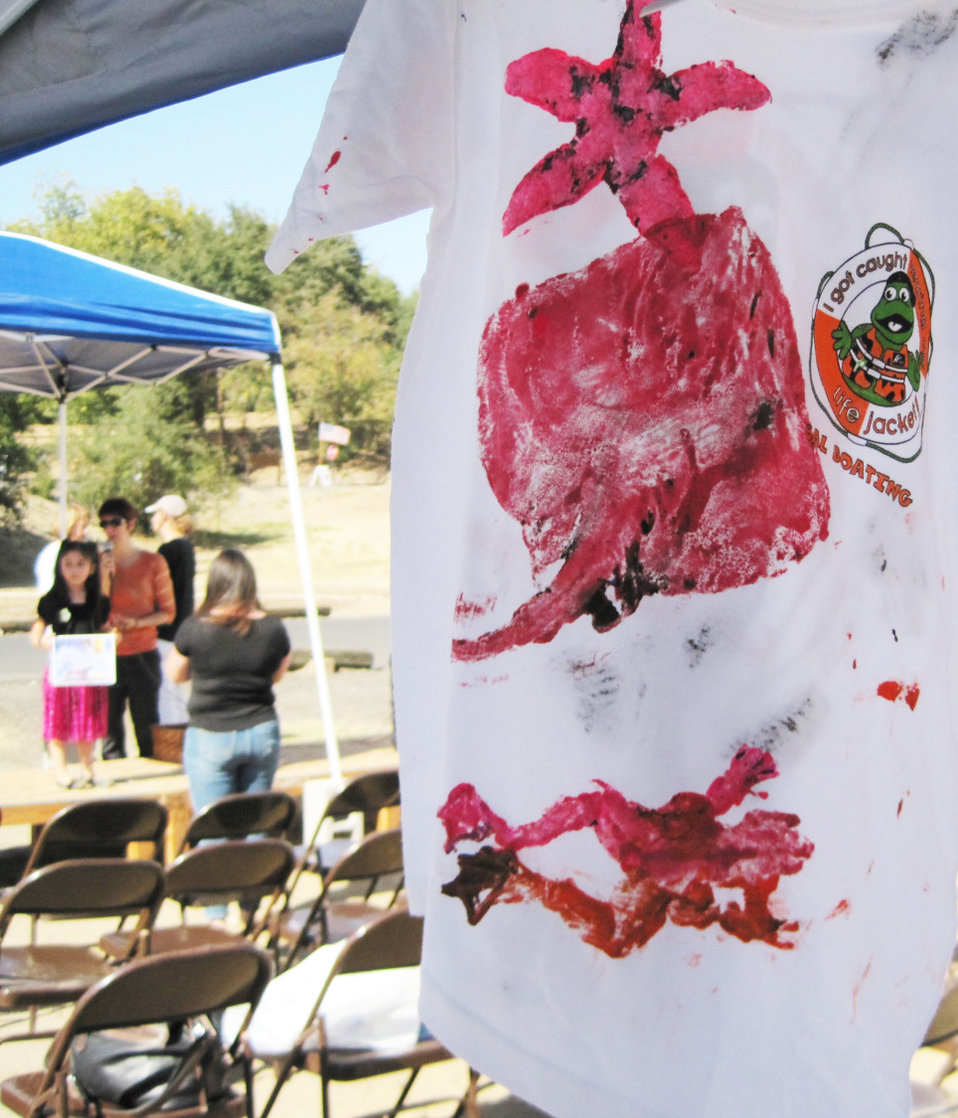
Celebrating the salmon – 2013 Salmon Festival at Stanislaus River Parks

Student visitors to the Corps of Engineers booth made hand-stamped t-shirts decorated with a variety of fresh water and salt water creature shapes during the fifth annual Salmon Festival at Stanislaus River Parks Oct. 26, 2013. Young fans of the Chinook salmon celebrated the famous fish in drawings, paintings and hand-painted t-shirts at the U.S. Army Corps of Engineers facility in Knights Ferry, Calif.